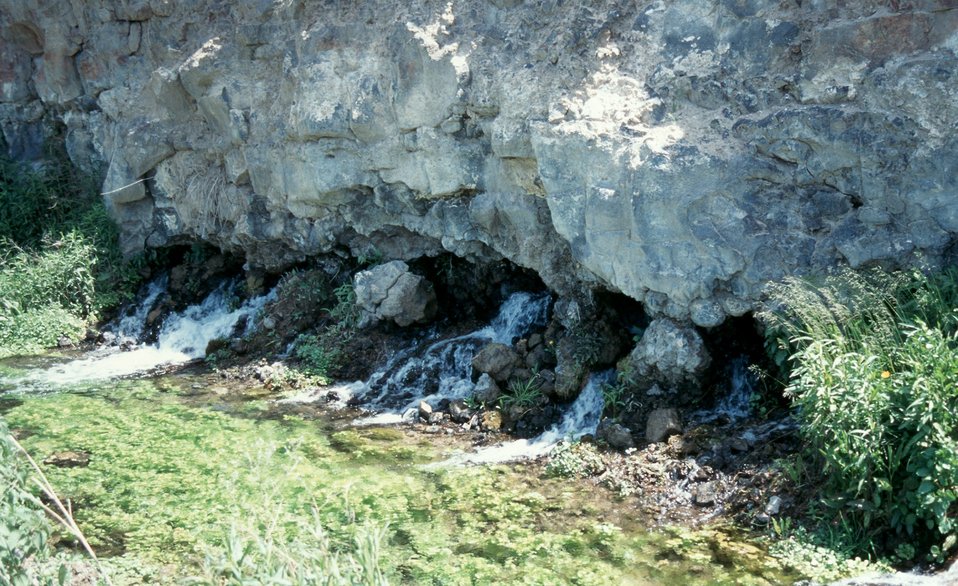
Close up thousand springs water Jarbridge Field Office LSRD Lower Snake River District